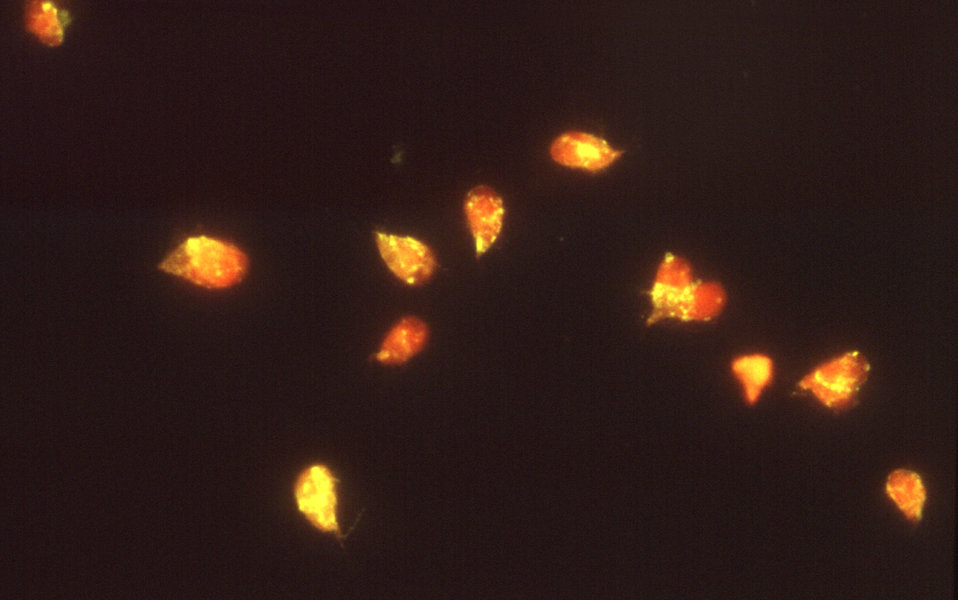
Using positive indirect immunofluorescence, this test reveals the presence of Giardia lamblia in a 1:64 serum dilution.